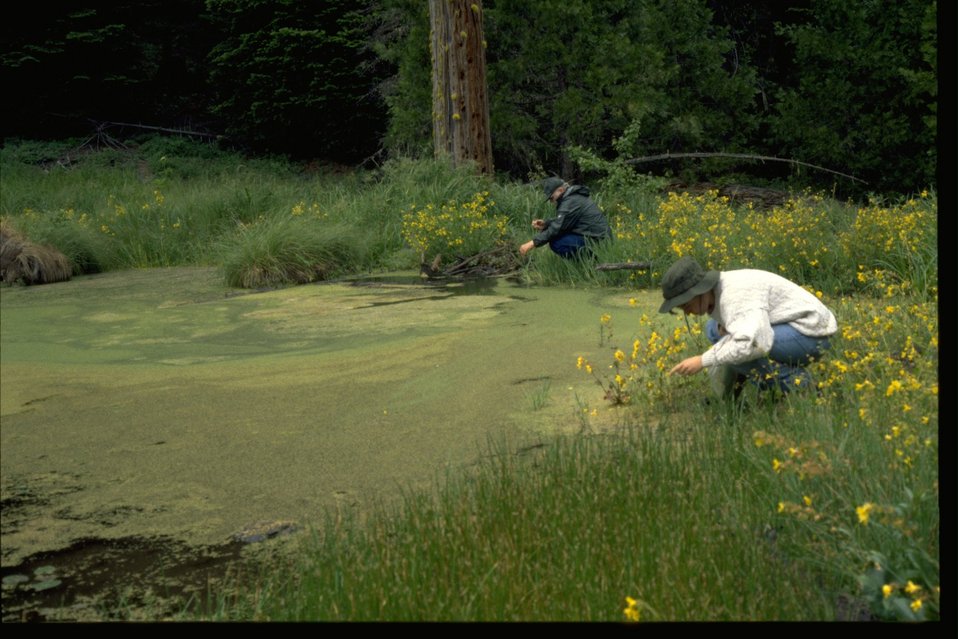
Jenny Creek LSR. Parsnip Lake's beaver pond.